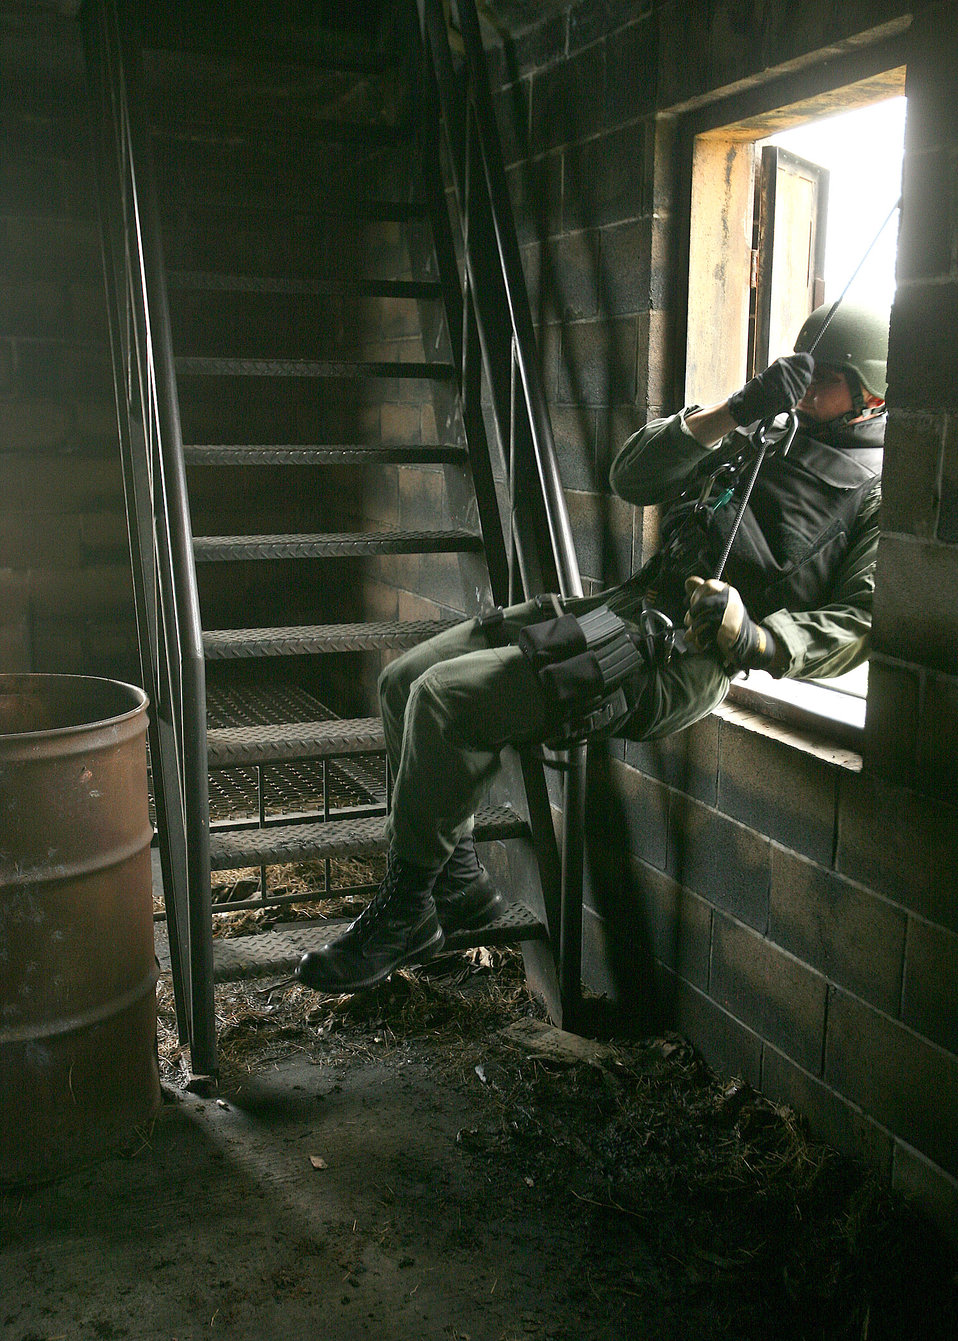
Go ahead, make my day

After repelling off the outer wall, 1st Lt. Stephen Addington swings through the open window of a target building during Emergency Services Team training May 4 at Lackland Air Force Base, Texas. Lieutenant Addington was on the team that competed at the Southeast Texas SWAT Competition April 24 in Beaumont, Texas. The Lackland AFB team placed first in the competition.